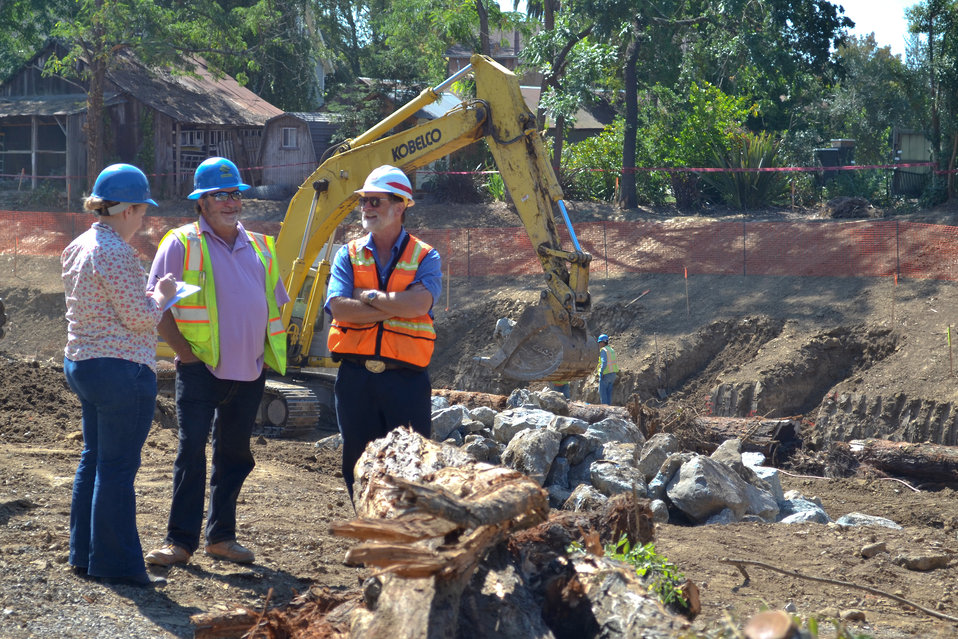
Giving interviews to Napa Valley Register

Floyd Bolton (right), deputy area engineer for the U.S. Army Corps of Engineers Sacramento District, and David Bilse (center), project superintendent for Proven Management Inc., give interviews to Napa Valley Register reporter Chantal Lovell July 10, 2012, in Napa, Calif. Construction crews are wrapping up concrete placement on two box culverts to help route water from the creek to Napa River during high water. The $14.8 million flood risk reduction and habitat restoration project is funded by the American Recovery and Reinvestment Act of 2009 and is a joint effort by the Corps, the city of Napa and the Napa Flood Control and Water Conservation District.